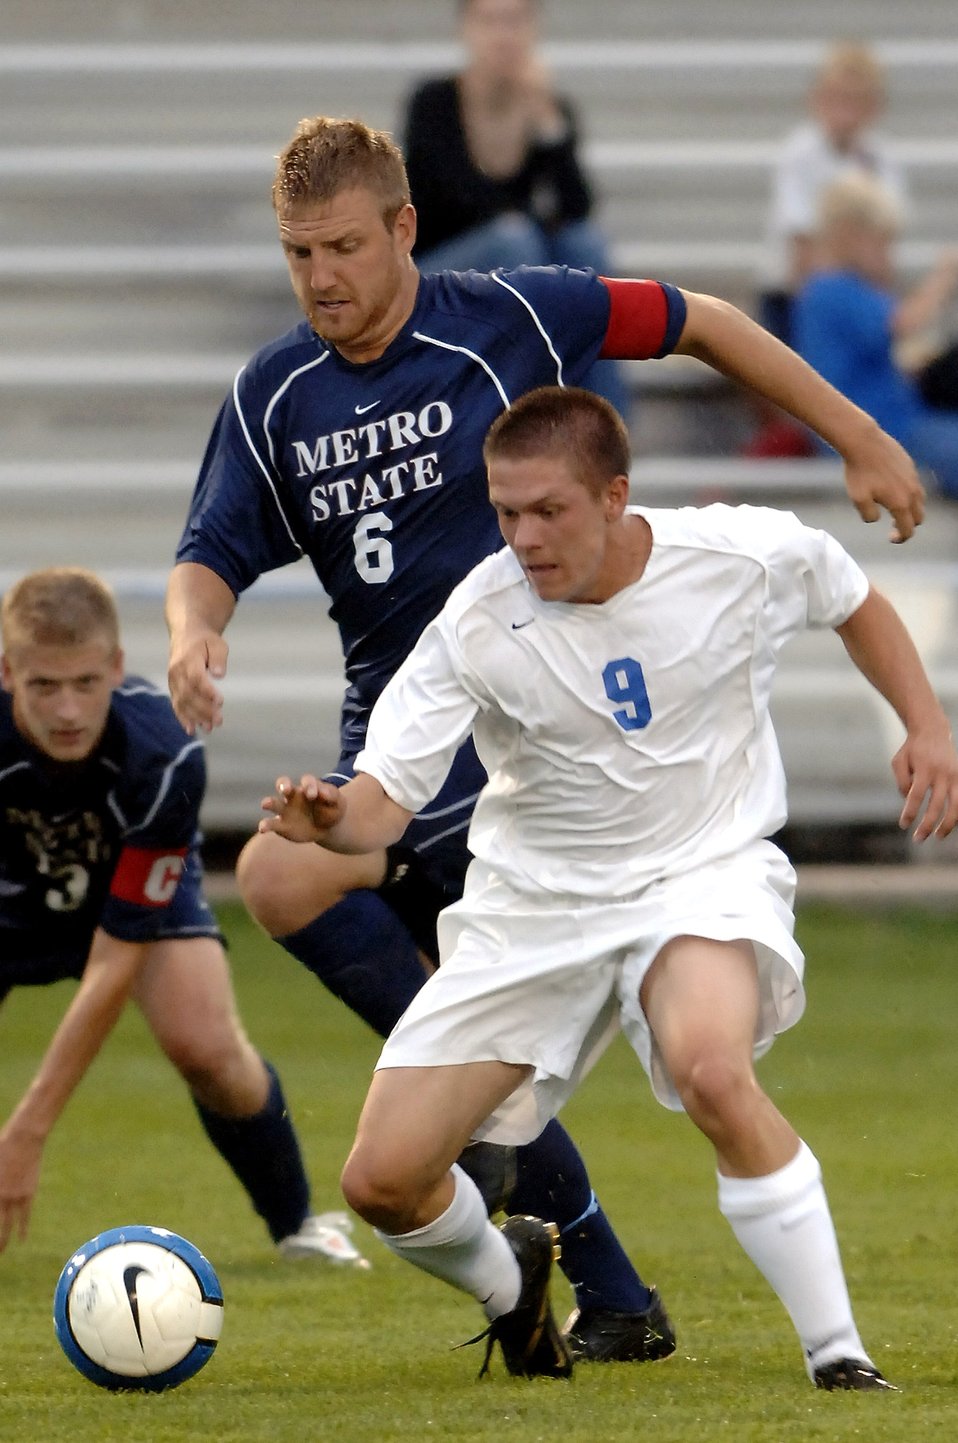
Academy soccer

Cadet 1st Class Kyle Schafer drives toward the goal during a men's exhibition soccer match Aug. 25 against Metropolitan State College of Denver at the U.S. Air Force Academy in Colorado Springs, Colo.